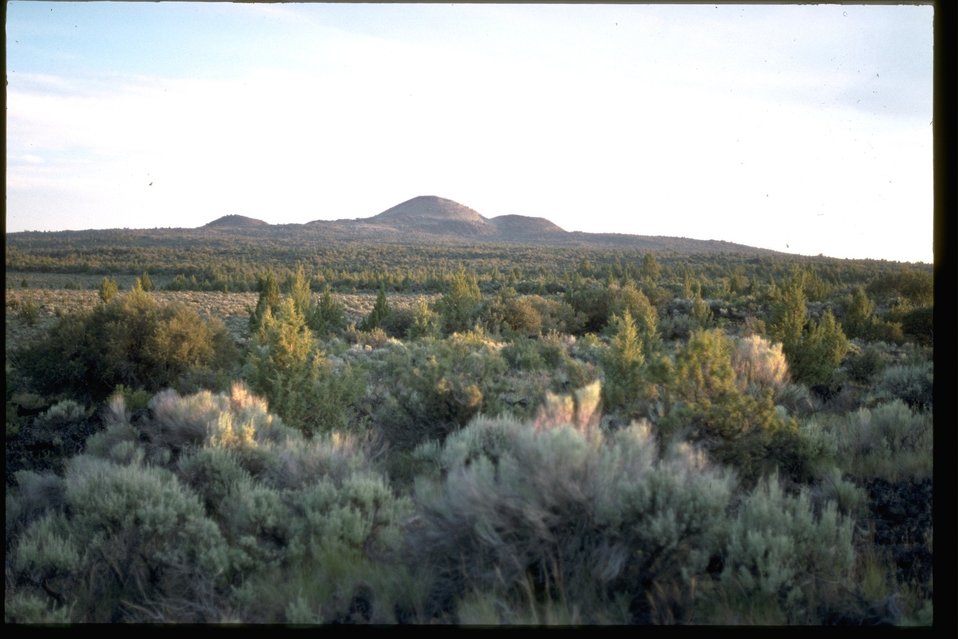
Squaw Ridge Lava Bed. North end looking South. Squaw Ridge WSA OR 1-3.